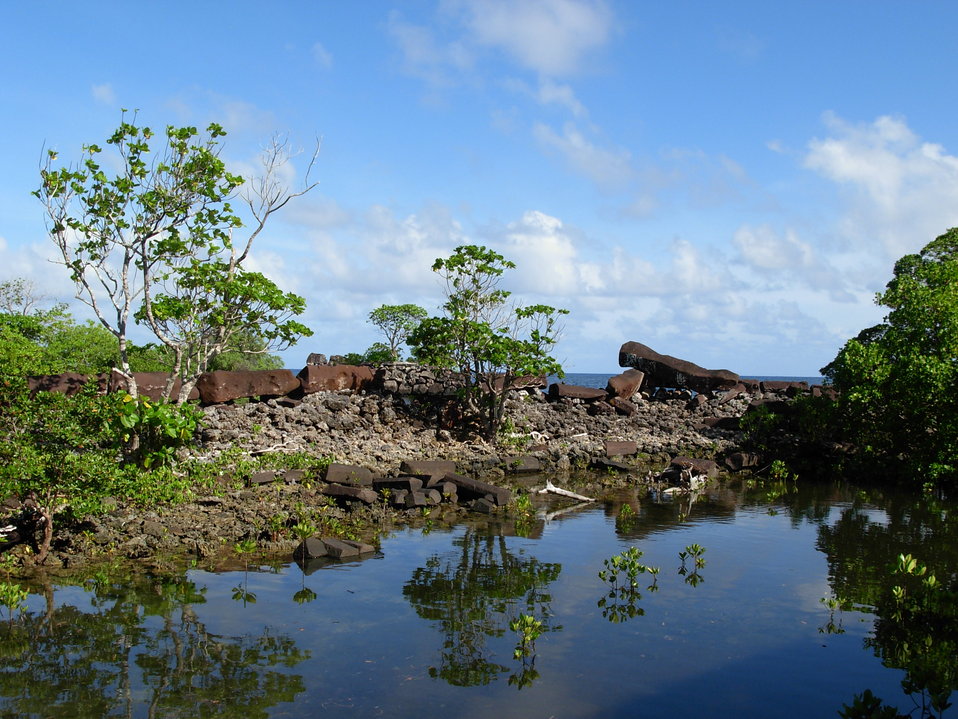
The volcanic 'log' city of Nan Madol built hundreds of years ago as a royal city